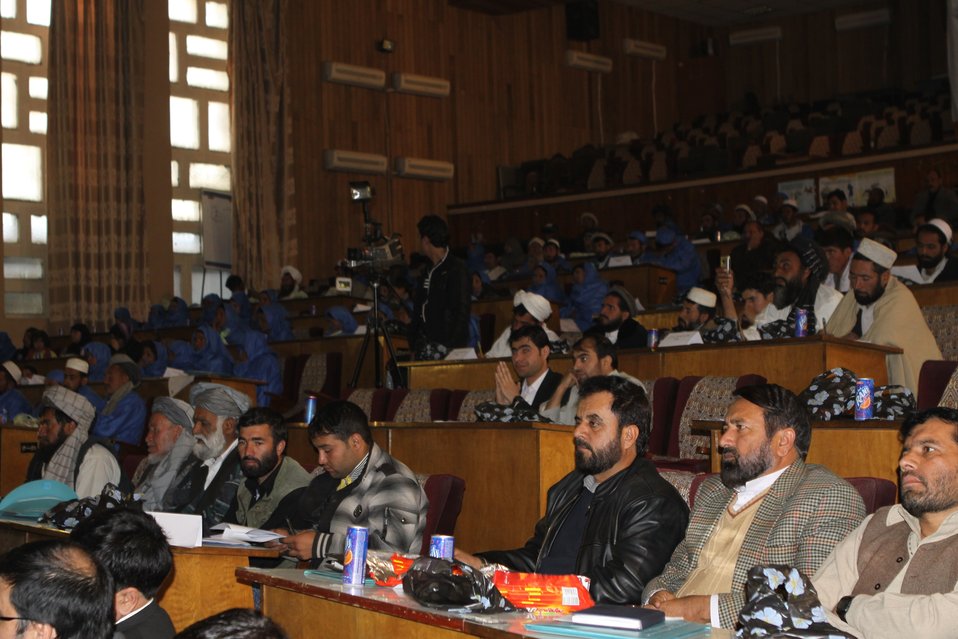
Community Health Workers Celebrated

Kabul, Afghanistan | December 5, 2010 — In support of the United Nations designated International Volunteer Day for Economic and Social Development, Afghanistan’s Ministry of Public Health celebrated its annual Community Health Worker Day today. Acting Minister of Public Health Dr. Suraya Dalil, USAID Senior Deputy Mission Director Robert Hellyer, other government officials, and international donors joined in recognizing the critical contribution of community health workers in Afghanistan and encouraging them to continue their voluntary support to their communities.
The event praised the contributions of the more than 22,000 volunteers throughout the country who deliver community level health-education, counseling, and services out of village health posts located in private homes. The Ministry of Public Health envisioned that community-based healthcare programs will actively encourage communities and families to adopt healthy lifestyles and behaviors, and provide families access to high quality and socially acceptable preventative medicine and life-saving services.
“We have 22,000 community health workers in Afghanistan that are able to implement the basic and standard medicines. They all have been trained through a job description,” said Minister Dalil. Addressing the health workers, she added, “I am proud and feel powerful that I have people like you.”
USAID-funded health projects collaborate closely with the Ministry of Public Health to improve the health and nutritional status of Afghans, provide quality primary healthcare, and promote healthy behaviors at the community and household-levels. USAID supported the training of more than 9,000 of the volunteer community health workers currently working in Afghanistan.
“On behalf of the American people, I congratulate the Community Health Workers for their diligence to gain the skills and knowledge necessary to serve their communities in this important role,” said USAID Senior Deputy Mission Director Hellyer. “USAID strongly supports community based health care and believes that quality community-based health services are essential to reaching Afghanistan’s Millennium Development Goals.”
To support the Basic Package of Health Services, USAID assisted in developing the community health worker training manual, helped train community health worker supervisors and master-trainers, facilitated in-service training, and produced and developed reporting tools, job aids, and education materials.